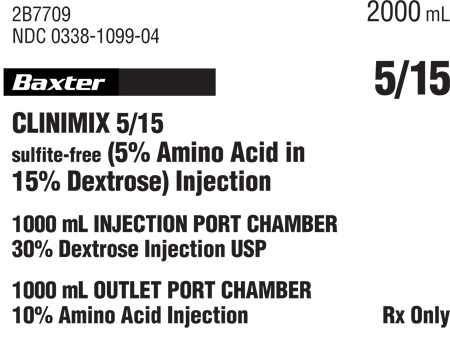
RECALLED – Baxter Clinimix

January 3, 2013 – Product Recall – Baxter Initiates Nationwide Voluntary recall Of Select Lots of Premix Parenteral Nutrition .